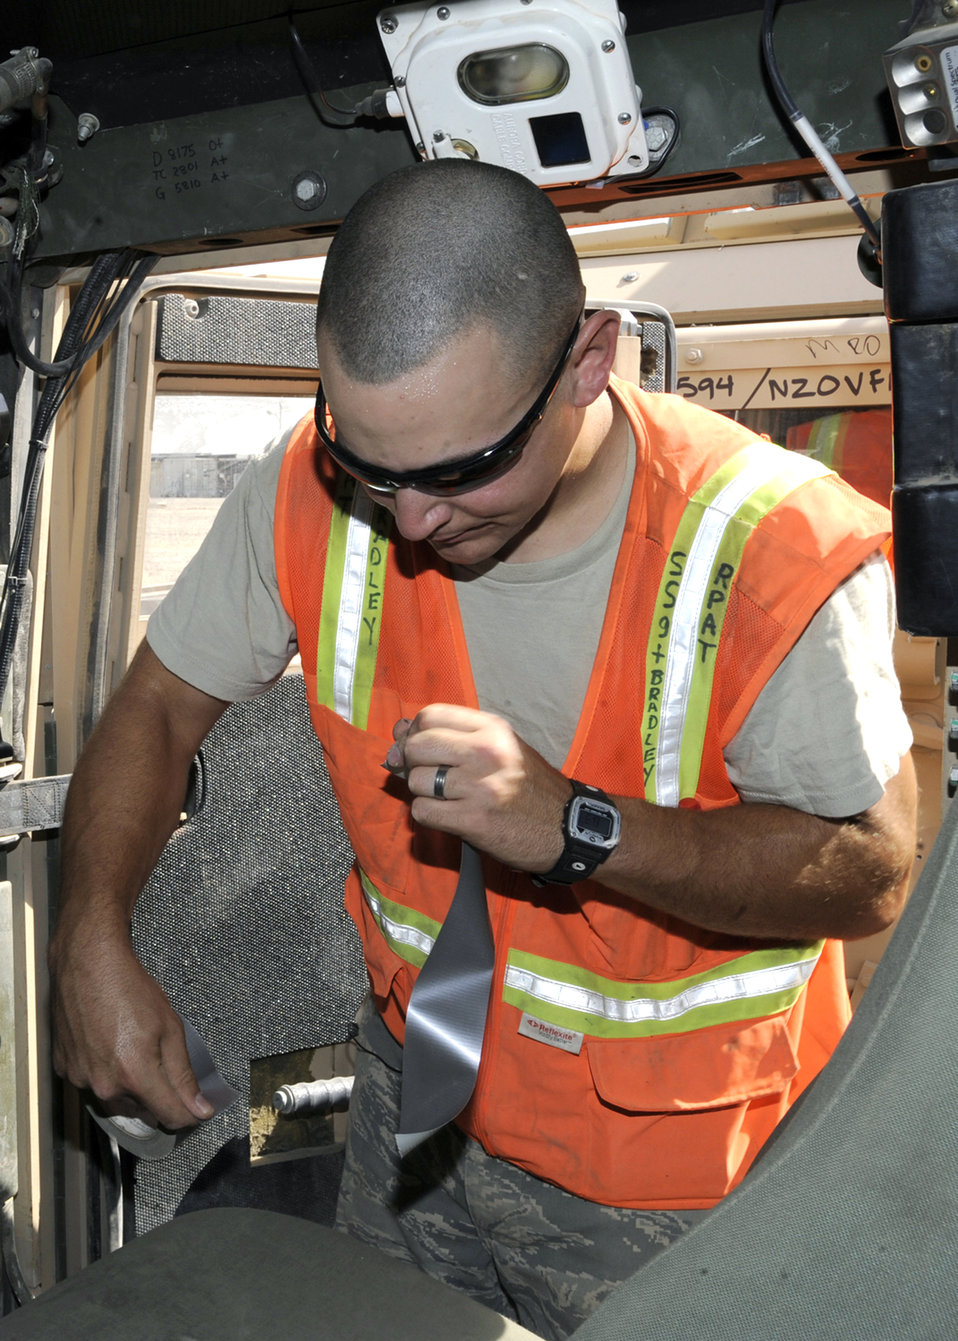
Airmen help clear the battlefield

Staff Sgt. Bryan Bradley processes a humvee for departure June 16, 2010, at the Redistribution Property Assistance Team Yard, Joint Base Balad, Iraq. The RPAT was developed to process billions of dollars in equipment at one of eight RPATS spread across Iraq, for refurbishment in the United States or for deployment to locations of higher priority. Sergeant Bradley is assigned to the 732nd Expeditionary Logistics Readiness Squadron.